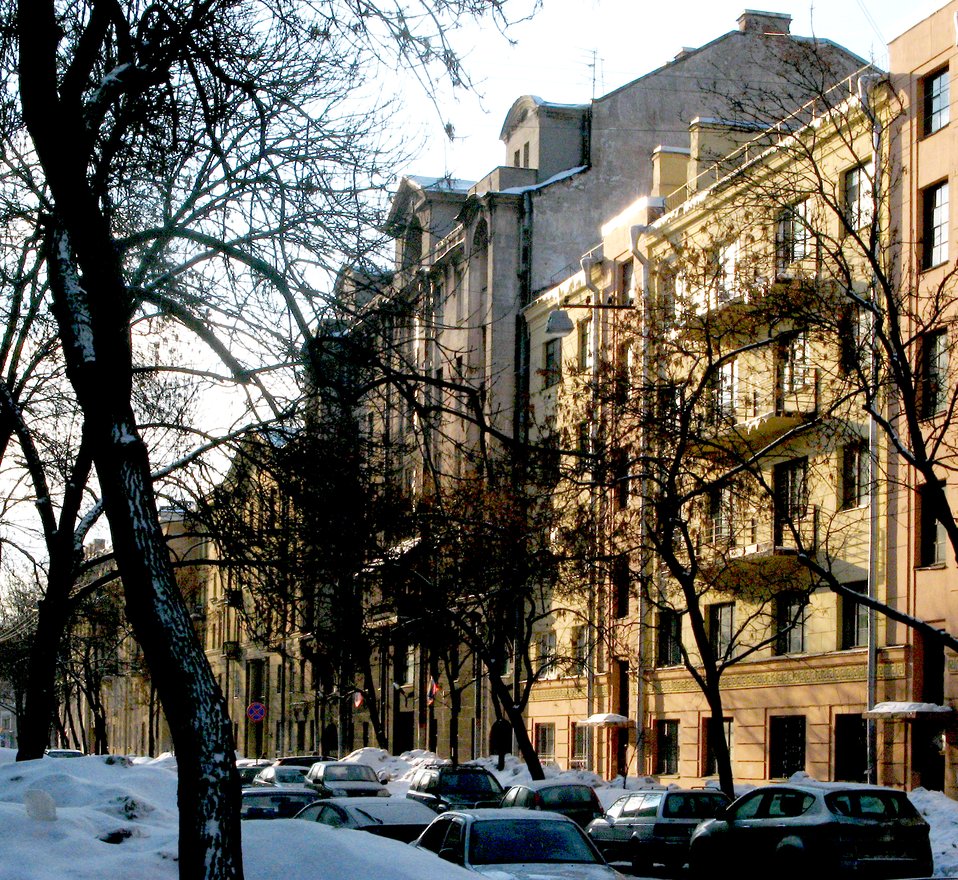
Русский: 15-линия, д. 20, 18 и 16, В.О., Санкт-Петербург, Россия. Building number 20, 18 and 16, 15-line, Vasilievsky Island, Saint-Petersburg, Russia.